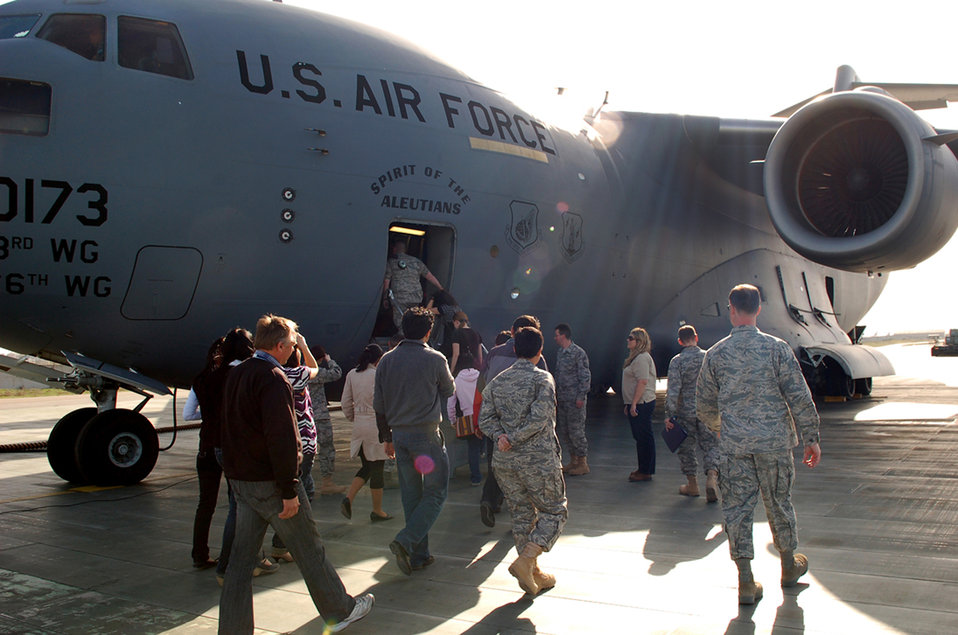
Kyrgyz students get insiders' glimpse of Manas mission

A group of students and faculty from the American University of Central Asia in Bishkek climb aboard a C-17 Globemaster III during a March 26 tour of Manas Air Base, Kyrgyzstan. They visit provided the students a look at the missions carried out daily in support of operations in Afghanistan.